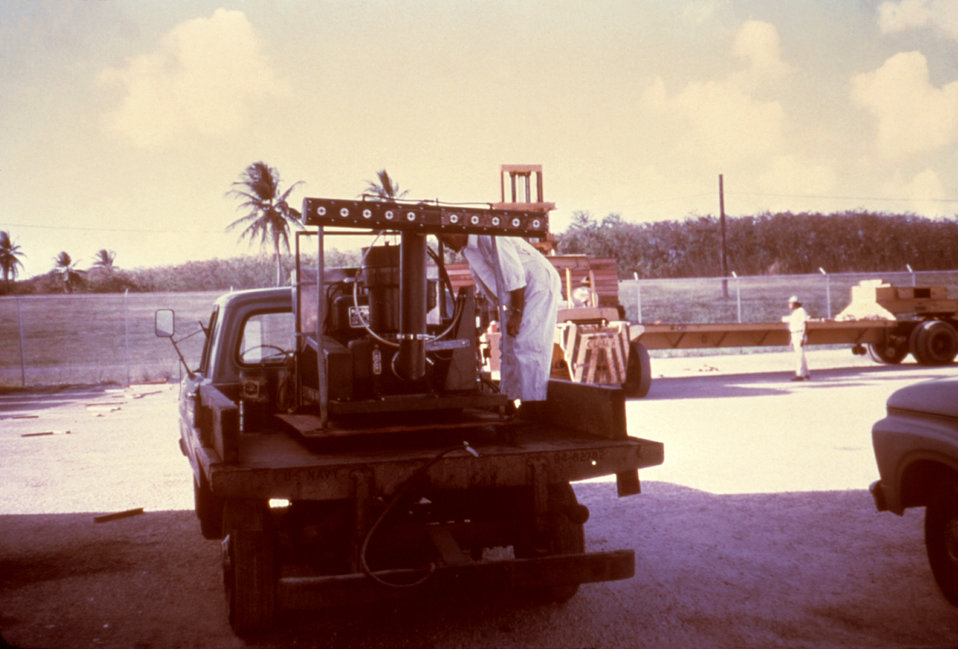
This was an experimental cold fog generator that employed ten nozzles through which it delivered an insecticidal fog.